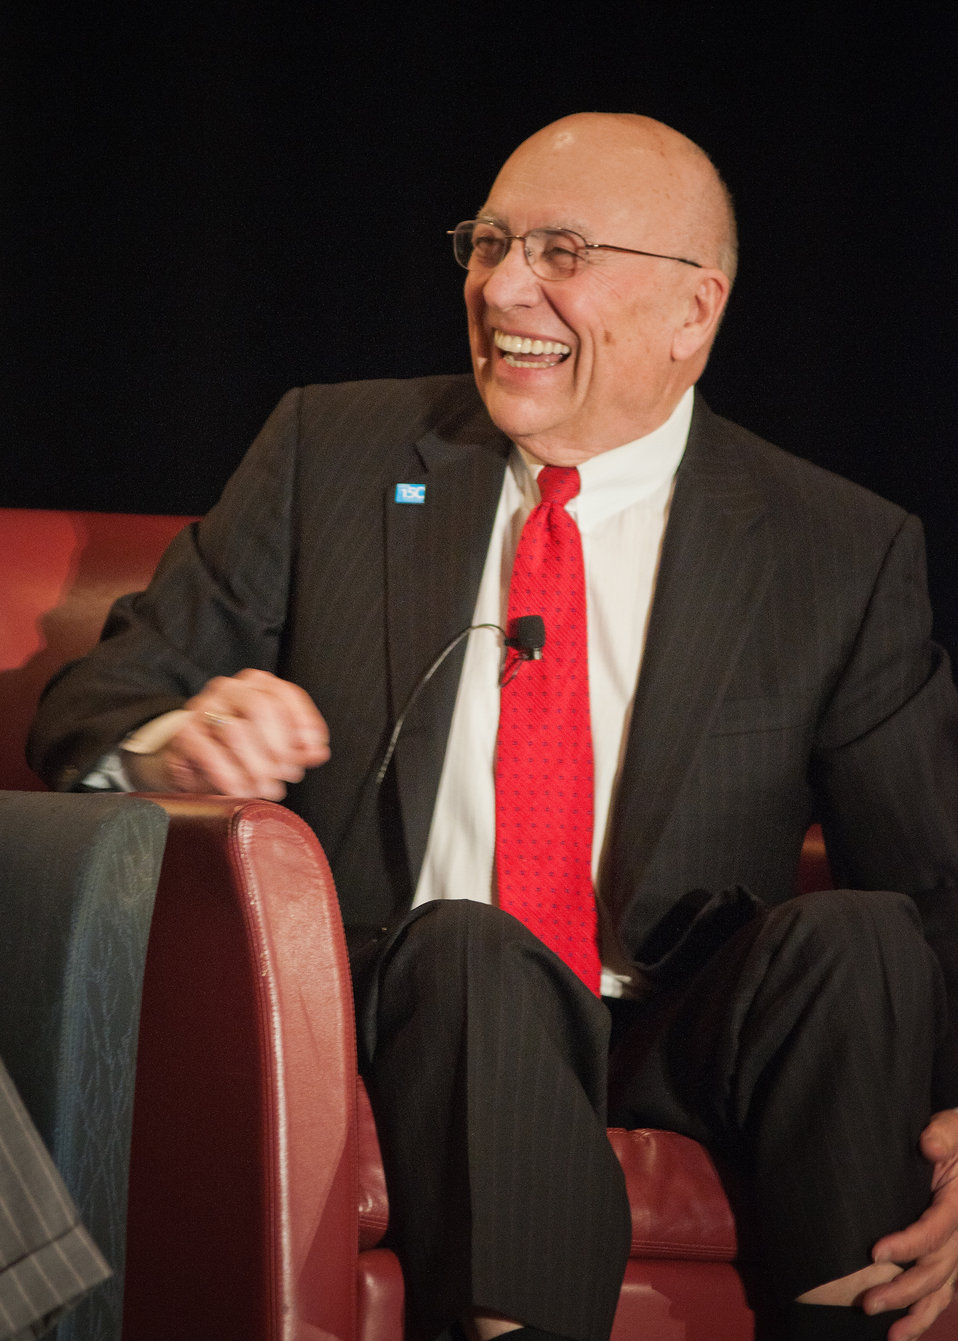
At the 2012 Agricultural Outlook Forum, “Moving Agriculture Forward” in Arlington, VA, held on Thursday, February 23, 2012, 7 former Secretaries of Agriculture sat on the plenary panel “Visions of the Future” hosted by current Agriculture Secretary Tom Vilsack. Clayton Yeutter laughs at remarks during the panel discussions.